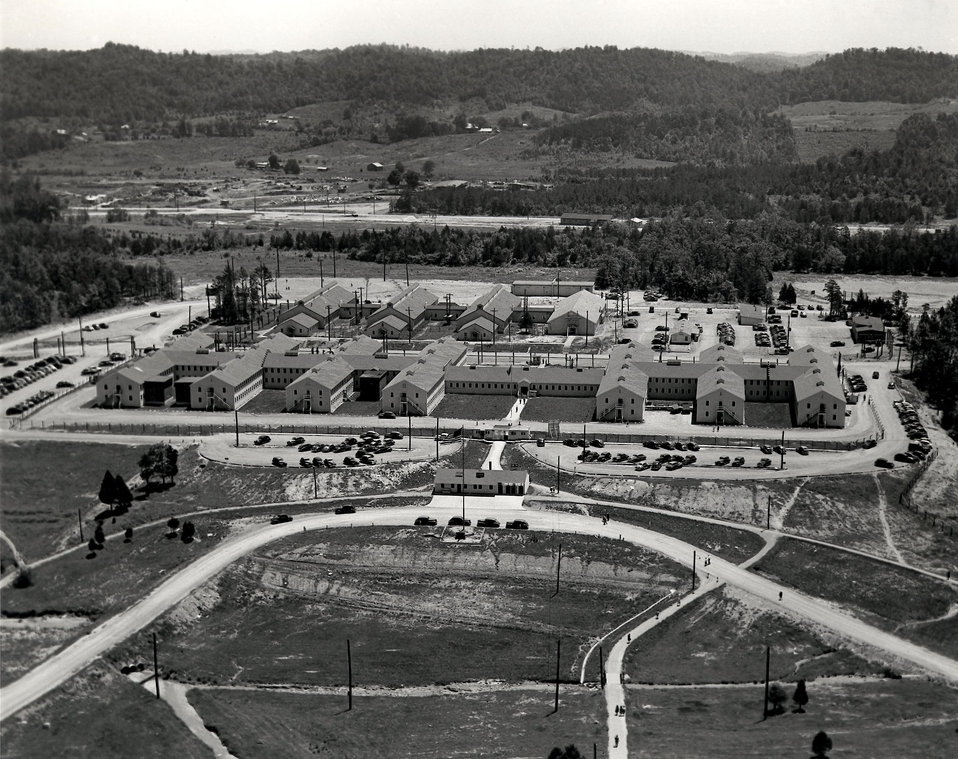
Air View AEC Admin. Bldg. Oak Ridge

3514 DOE photo by Ed Westcott 1947 Oak Ridge Tennessee